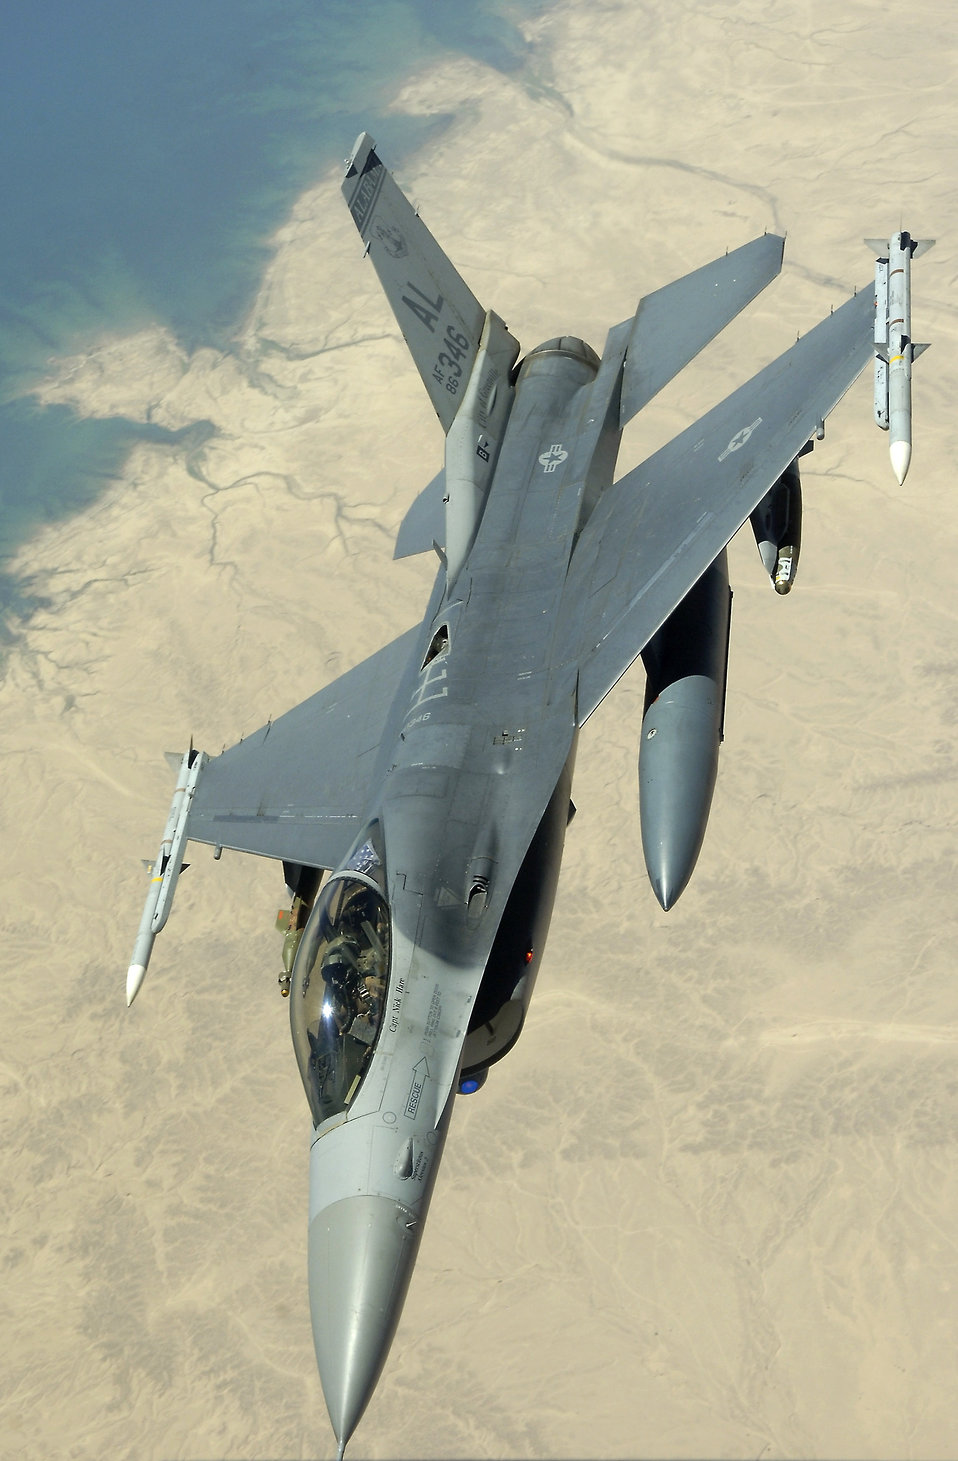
Two refuelers, one squadron can handle any situation

An F-16 Fighting Falcon flies a close-air-support mission over Iraq in support of Operation Iraqi Freedom on July 18. The F-16 is an Alabama Air National Guard plane, deployed to the area.